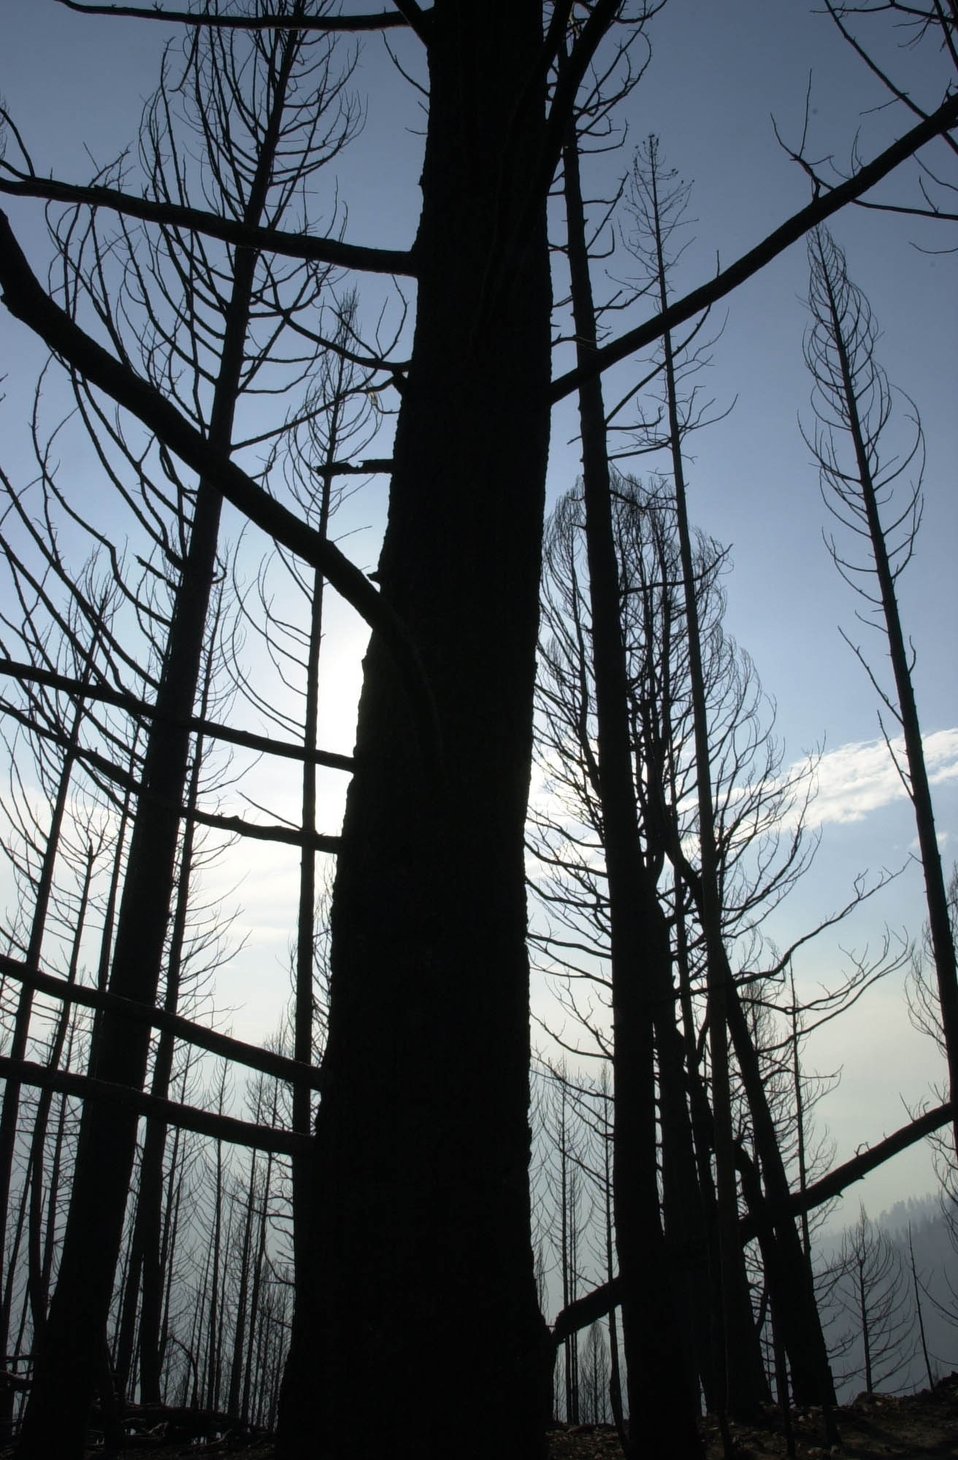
Burned trees Fire Clearwater Fire Salmon Field Office USRD Upper Snake River District